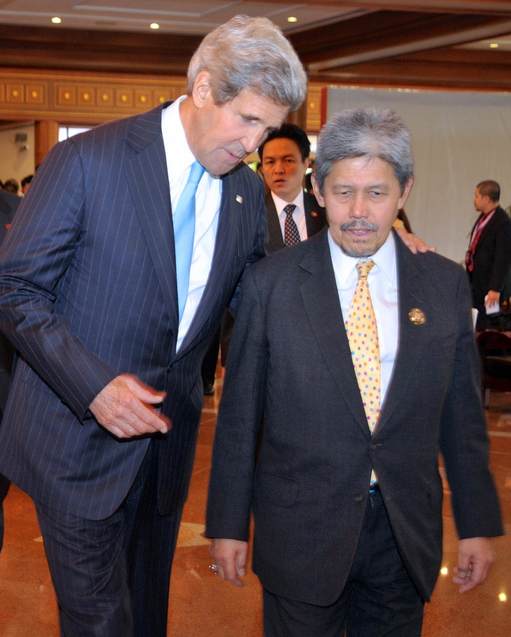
Secretary Kerry Chats With Prince Bolkiah of Brunei

U.S. Secretary of State John Kerry chats with Crown Prince Mohamed Bolkiah, the Foreign Minister of Brunei, as they walk between meetings in Bandar Seri Begawan, Brunei. on July 2, 2013.